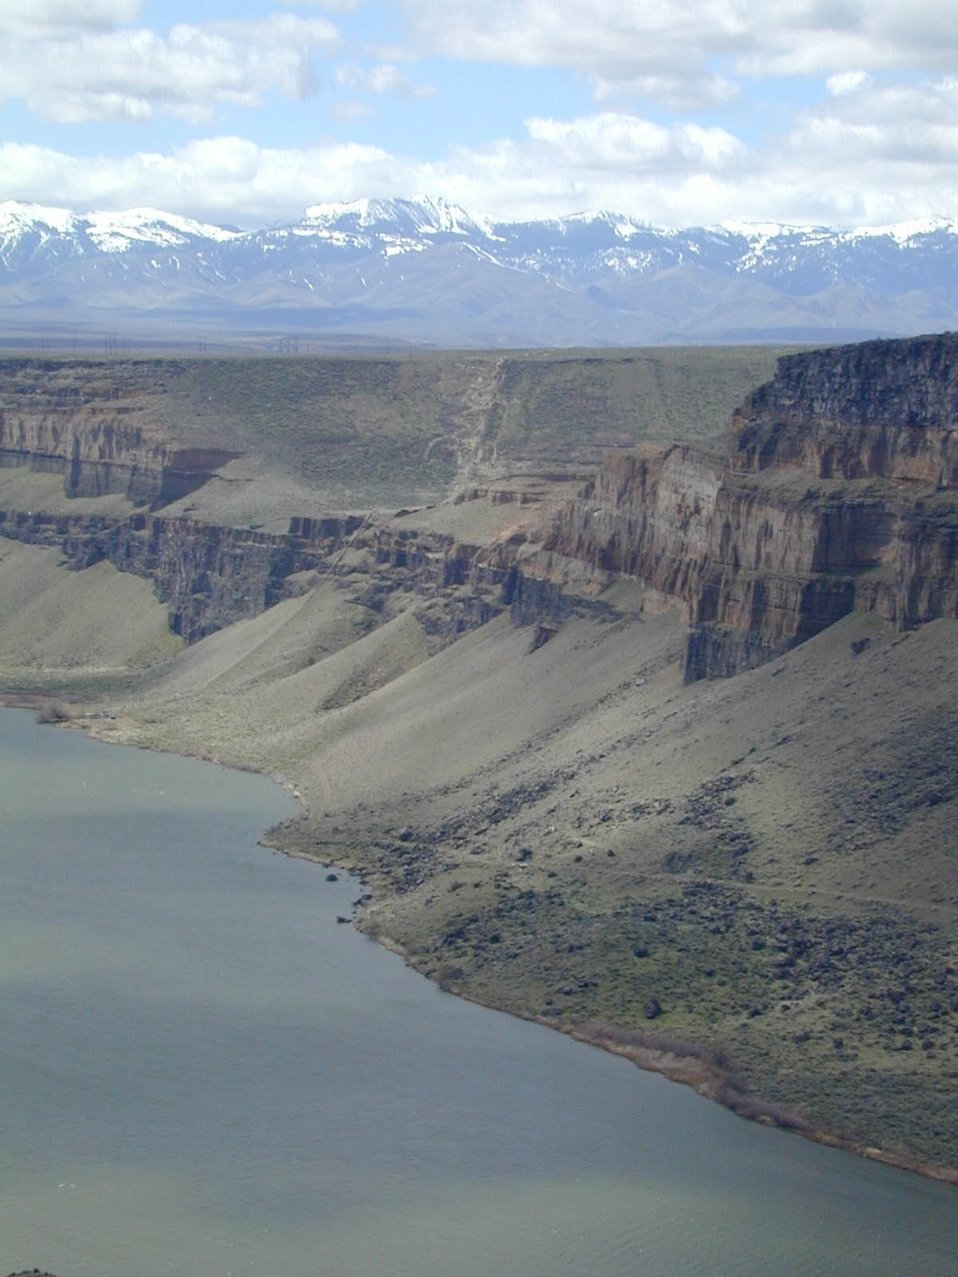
Scenic Snake River Birds of Prey National Conservation Area Lower Snake River District LSRD Snake River Canyon